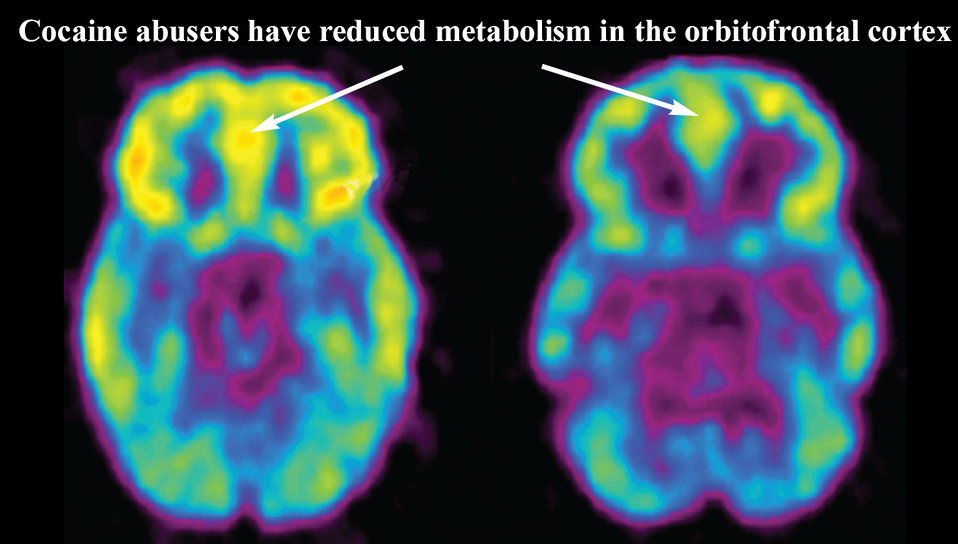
Cocaine abusers have reduced metabolism in the orbitofrontal cortex